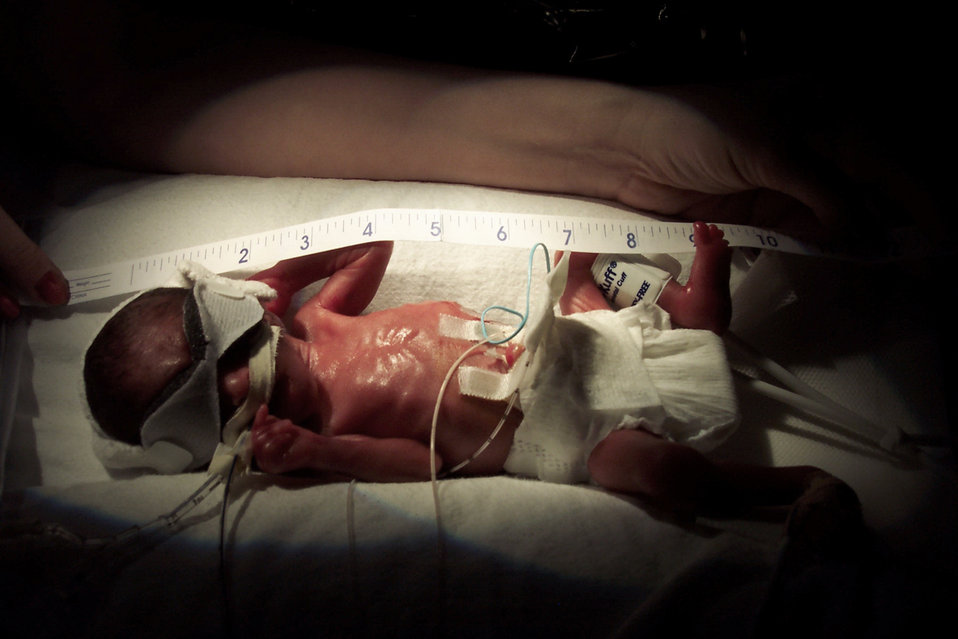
Miracle baby joins McGuire family

CAMDEN, N.J. -- Ariam Marie Morales is measured at a hospital here, where she was born 16 weeks early. At birth, she measured 12 inches long. She is the daughter of Mayra and Staff Sgt. Freddie Morales Fernandez of nearby McGuire Air Force Base.